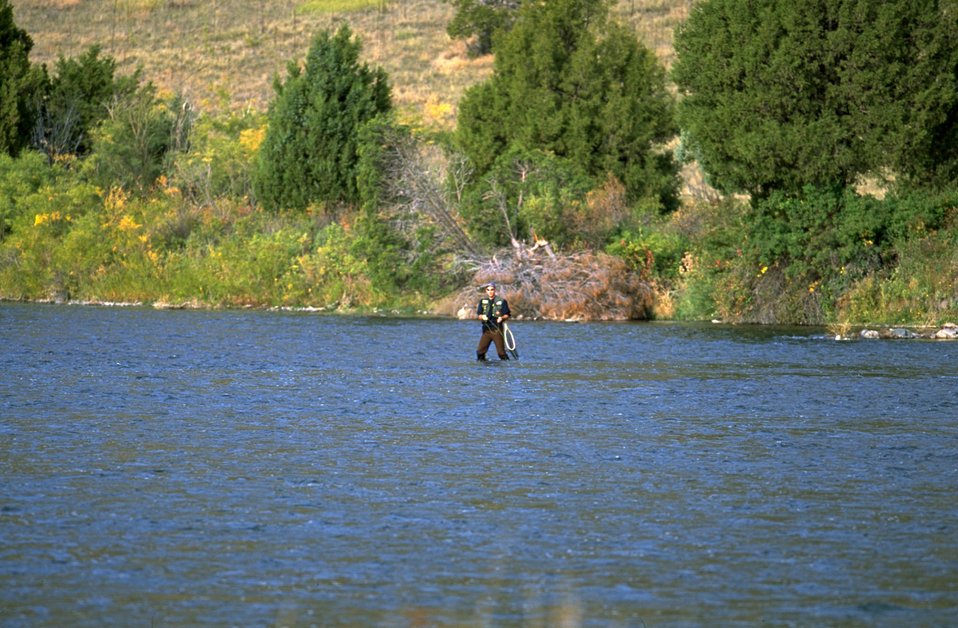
Fisherman in Madison River